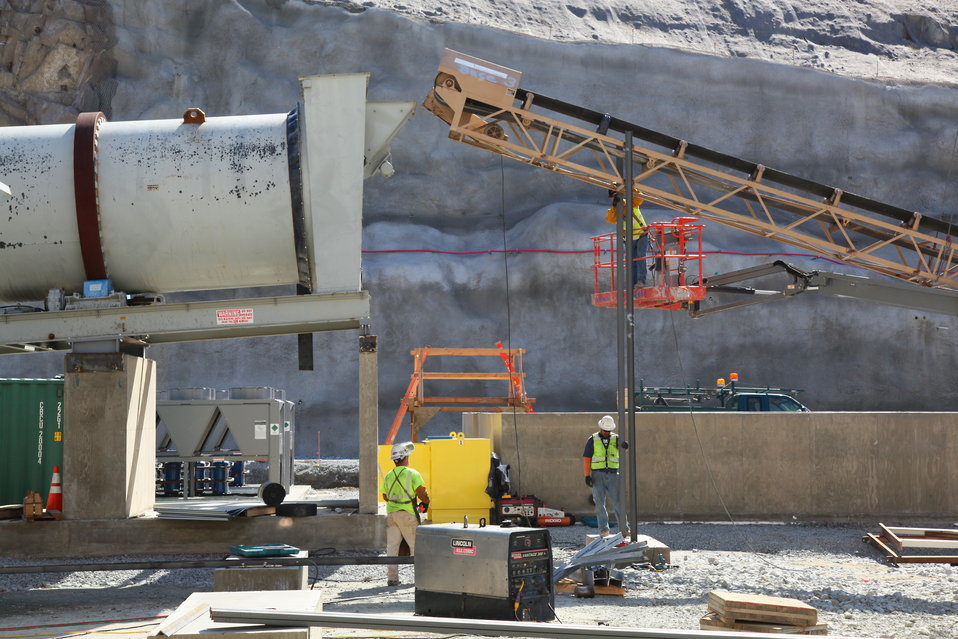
Sand drum placed into concrete batch plant at Folsom auxiliary spillway

Contractors for the U.S. Army Corps of Engineers Sacramento District position a sand drum in the concrete batch plant at the excavation site for the Folsom dam auxiliary spillway in Folsom, Calif., March 8, 2012.The sand drum is an integral component in processing high quality concrete as it heats and mixes the sand before it reaches the batch plant final mix. Concrete paving of the spillway chute is scheduled to begin in May. The spillway, scheduled to be ready for use in 2017, will allow Folsom Dam to release water sooner and more safely. The project is part of the Folsom Dam Joint Federal Project, a joint effort of the U.S. Army Corps of Engineers Sacramento District, the U.S. Bureau of Reclamation, the Central Valley Flood Protection Board and the Sacramento Area Flood Control Agency to improve the safety of the dam and reduce flood risk for the greater Sacramento area.